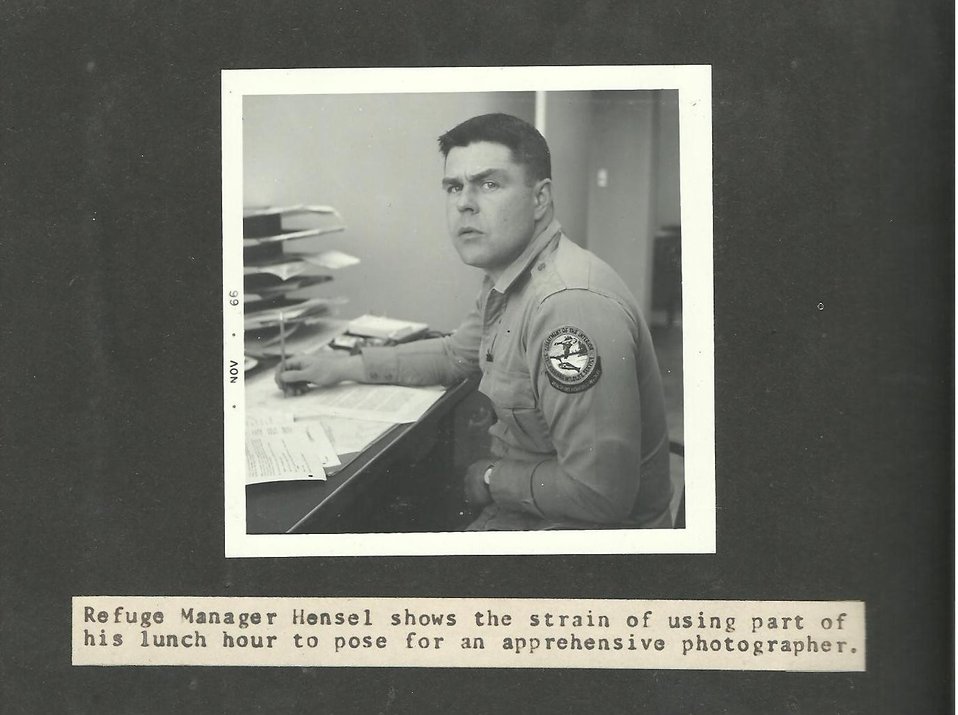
(1966) Refuge Manager Hensel

Credit: USFWS

Source and Contact: Kodiak National Wildlife Refuge